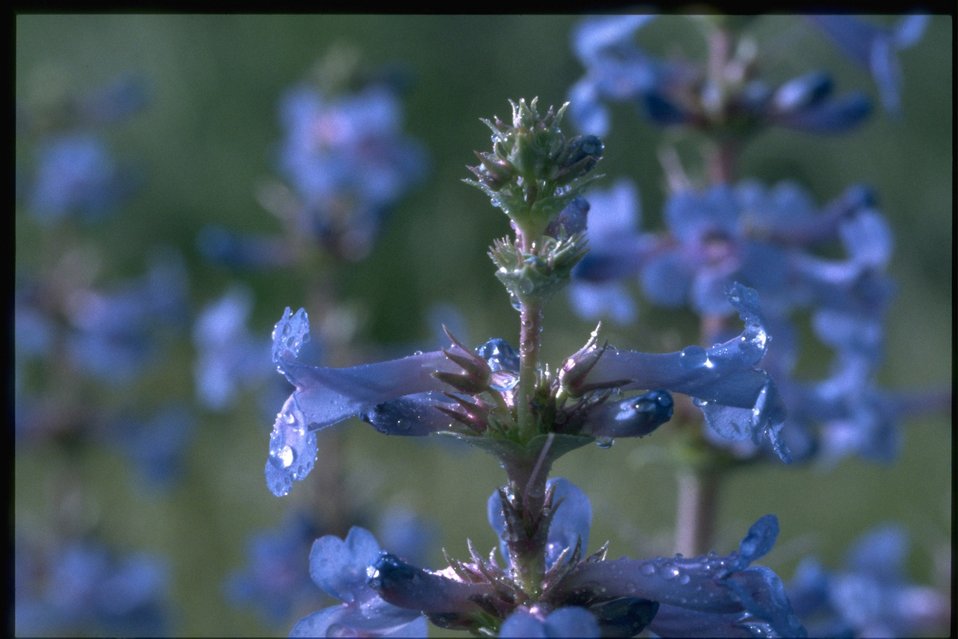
Closeup shot of Sand Penstemon (Penstemon acuminatus).